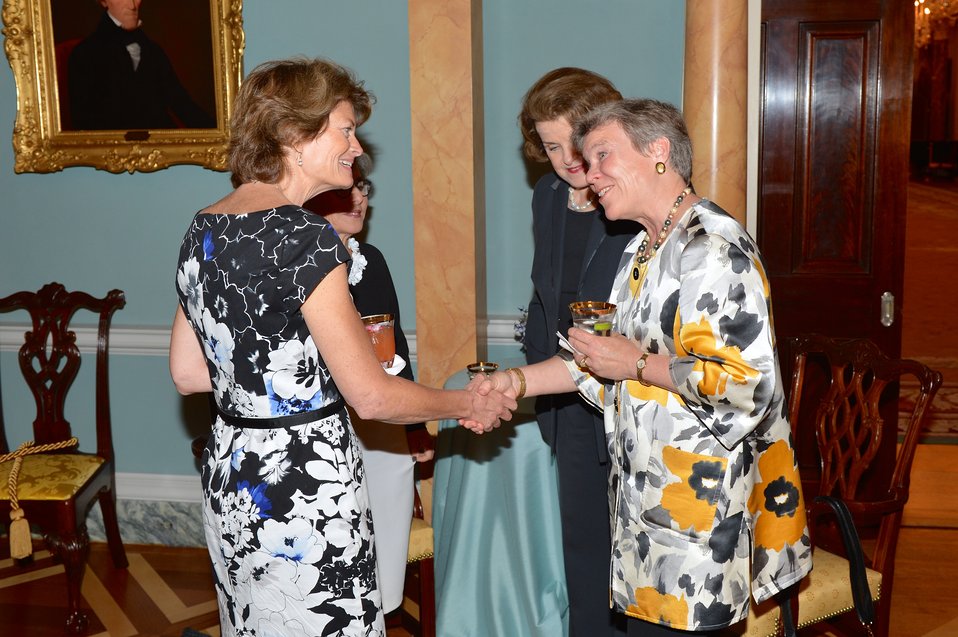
Under Secretary Gottemoeller Greets Senator Murkowski

With Senator Dianne Feinstein looking on, Under Secretary for Arms Control and International Security Rose Gottemoeller greets Senator Lisa Murkowski at a reception and dinner for female Senators hosted by U.S. Secretary of State John Kerry at the U.S. Department of State in Washington, D.C., on May 13, 2014.